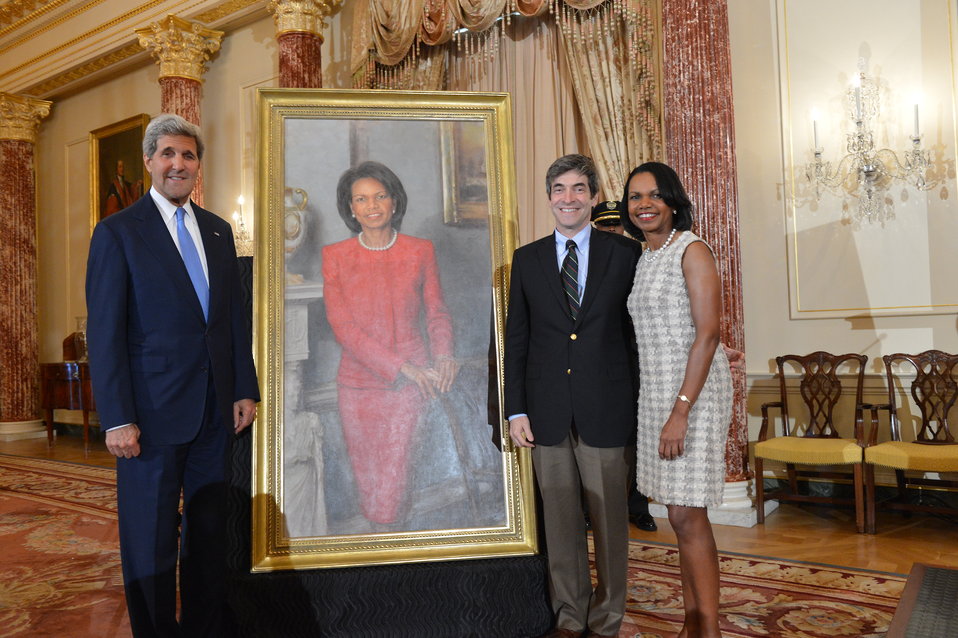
Secretary Kerry and Former Secretary of State Condoleezza Rice Pose for a Photo at a Portrait Unveiling Ceremony in Honor of the Former Secretary

U.S. Secretary of State John Kerry poses for a photo with former Secretary of State Condoleezza Rice at the portrait unveiling ceremony and reception in honor of the former Secretary at the U.S. Department of State in Washington, D.C. on June 18, 2014.